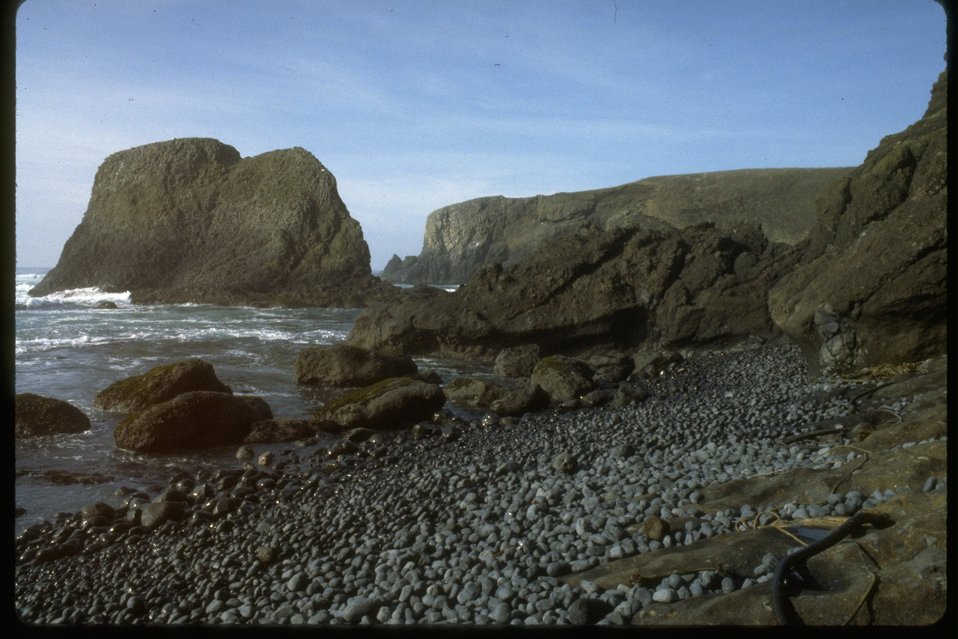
Cobble Beach and Colony Rock near Yaquina Head.